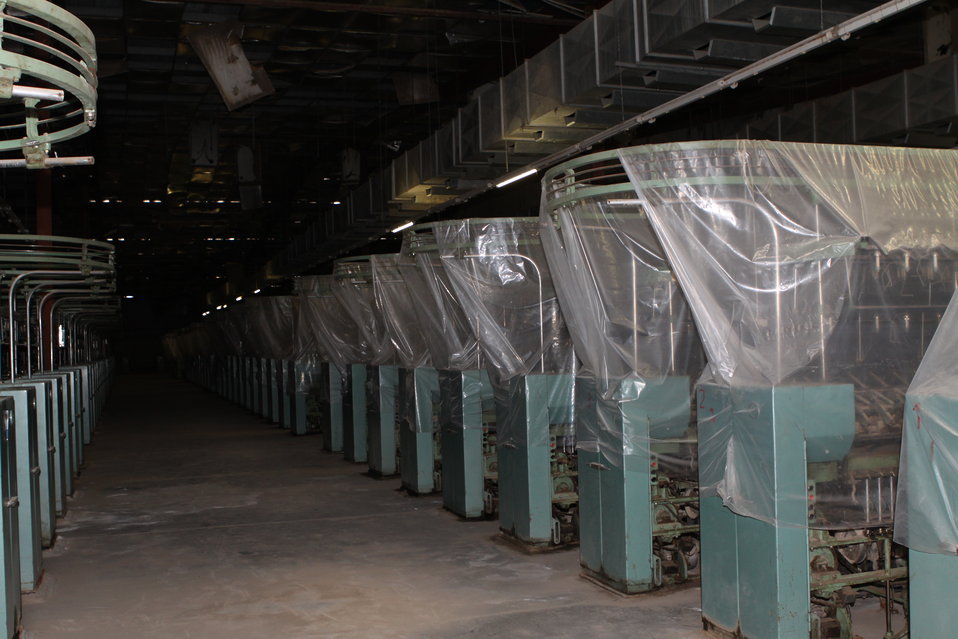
100525 Hirat Textile Company 729